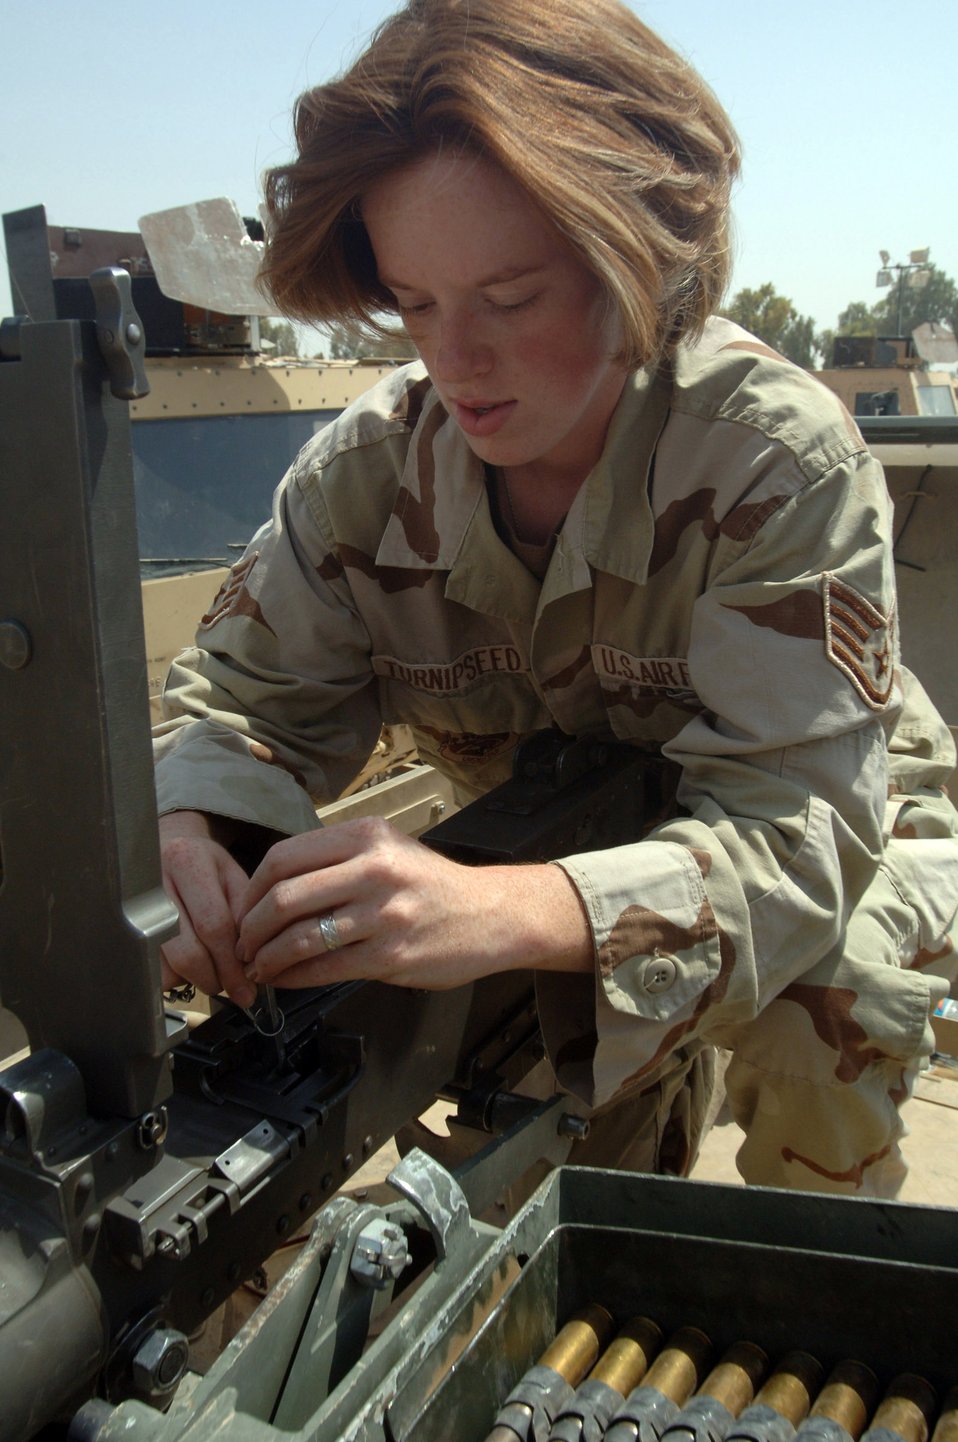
Convoy escorts continue heritage of Tuskegee Airmen

BALAD AIR BASE, Iraq -- Staff Sgt. Rebecca Turnipseed inspects a .50-caliber machine gun before a convoy escort mission. The Air Force escort units have yet to lose a customer to enemy attack. Sergeant Turnipseed is assigned to the 332nd Air Expeditionary Wing's Detachment 1.